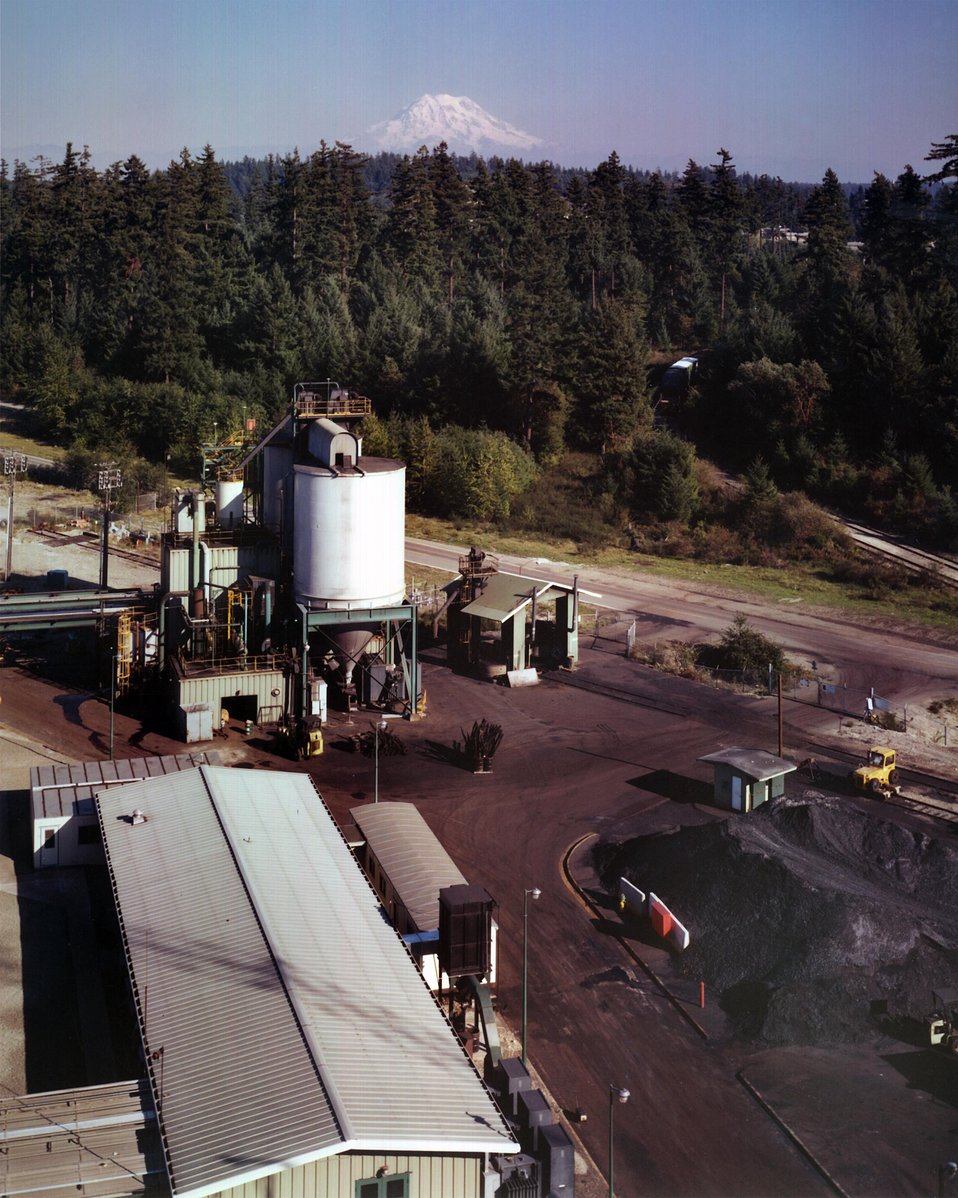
OVERALL VIEW OF COAL STORAGE (FAR RIGHT) AND SLURRY MIXING AND PRE-HEATING (LEFT).